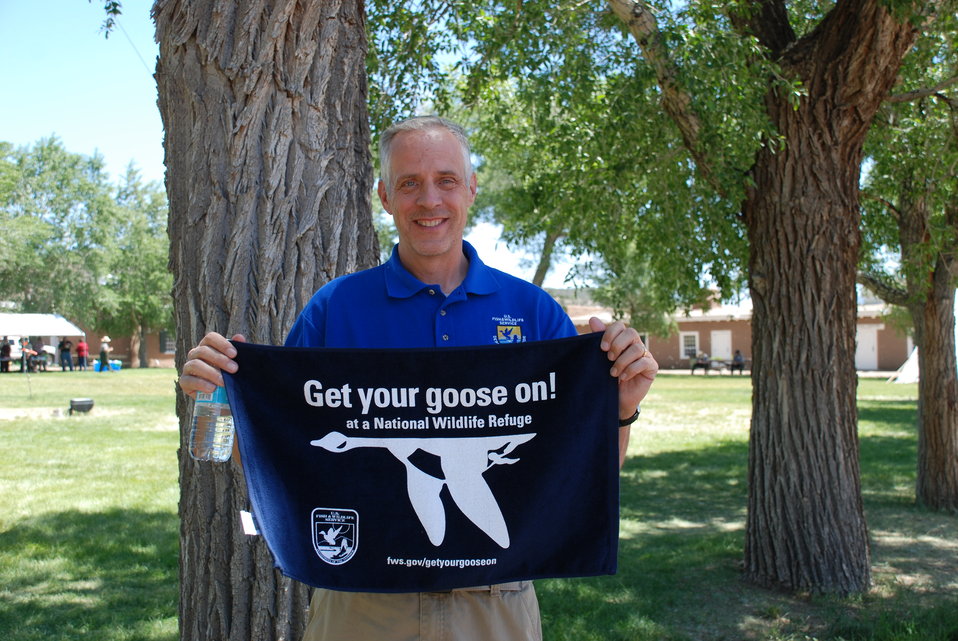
Steve Guertin Gets His Goose On!

Steve is the regional director of the Mountain-Prairie Region of the U.S. Fish and Wildlife Service.